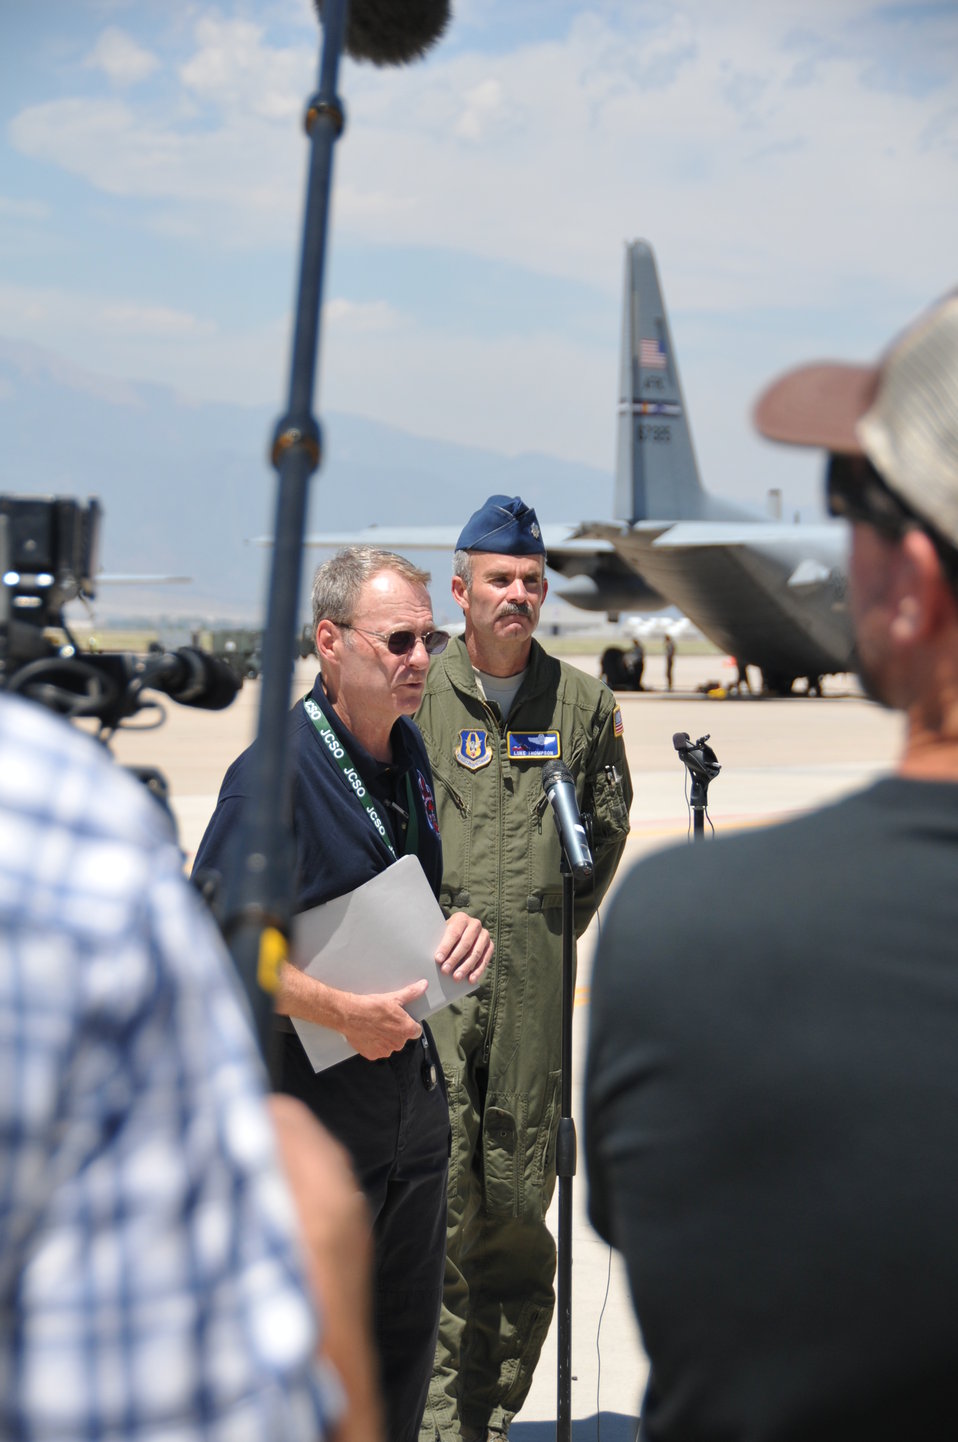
Colorado Wildfire

Lt. Col. Luke Thompson, 302nd Airlift Wing chief of aerial firefighting, and Jerry McCann, spokesman for the Rocky Mountain Area Coordination Center, speak with members of the media on the flightline at Peterson Air Force Base, Colo., June 25, 2012. Thompson and McCann addressed questions regarding the activation of the Department of Defense's Modular Airborne Firefighting System capability.